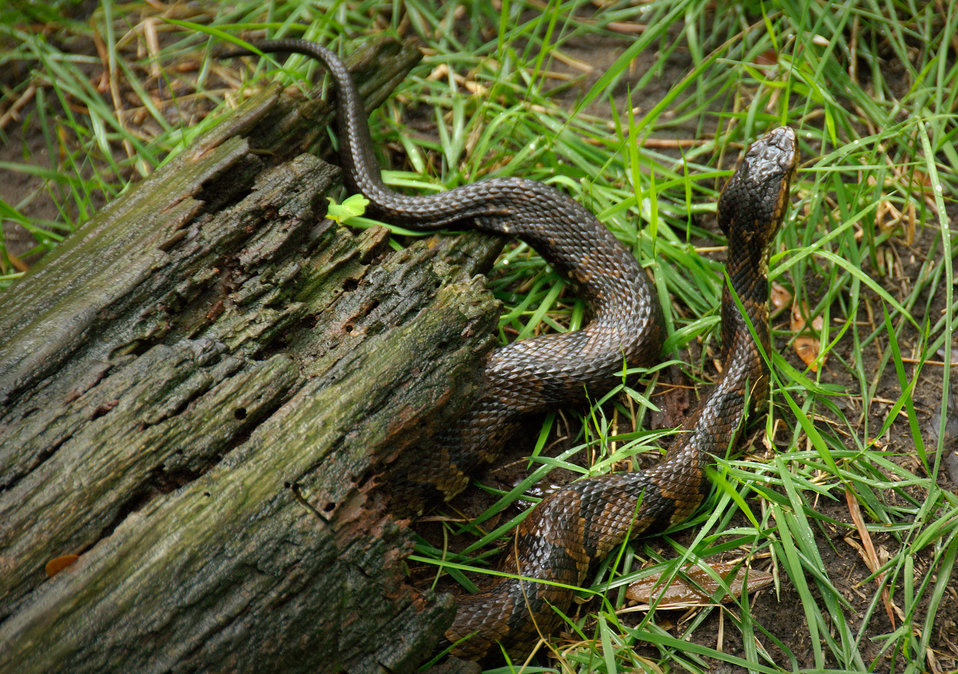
This 2008 photograph depicted a venomous 'Eastern cottonmouth' snake (also see PHIL 8125), Agkistrodon p. piscivorus, as it was slithering through its moist Edisto, South Carolina environment. The Eastern cottonmouth is the largest member of its genus, which includes its copperhead cousin, Agkistrodon contortrix (PHIL 10841 through 10851).